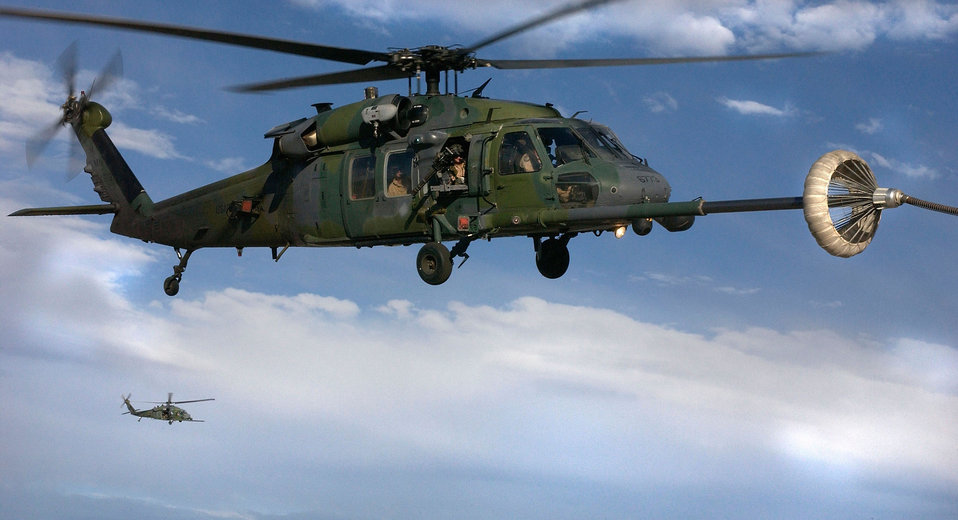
Pair of Pave Hawks

NAVAL AIR STATION FALLON, Nev. -- A pair of HH-60G Pave Hawks from the 41st Rescue Squadron, Moody Air Force Base, Ga., conduct in-flight refueling here as part of Desert Rescue XI on August 13, 2003. The joint-service combat search and rescue training exercise simulates downed aircrew behind enemy lines and allows airmen to practice rescue-related missions.